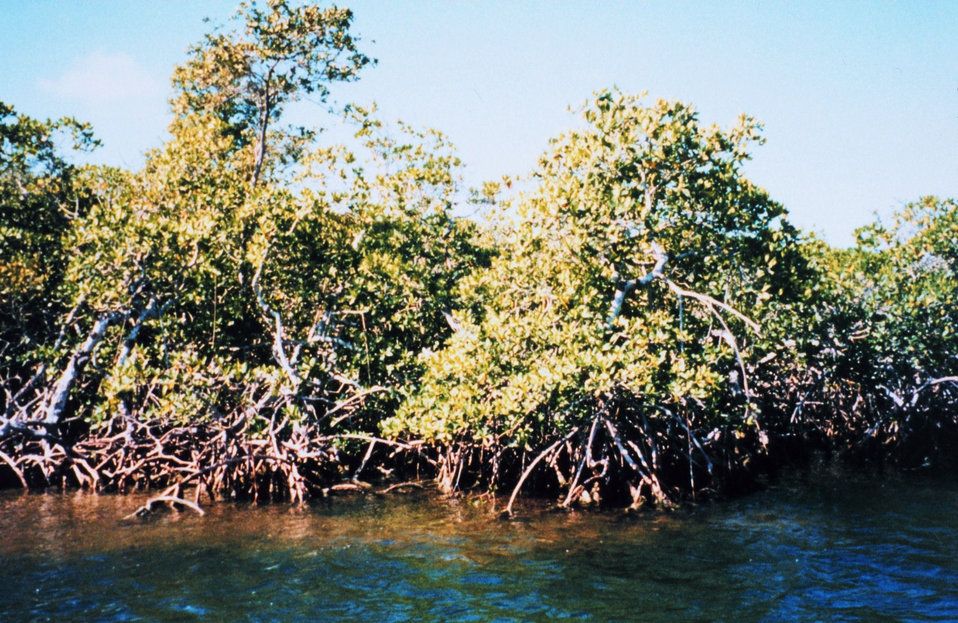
Typical red mangrove with prop roots - characteristic of high salinity area